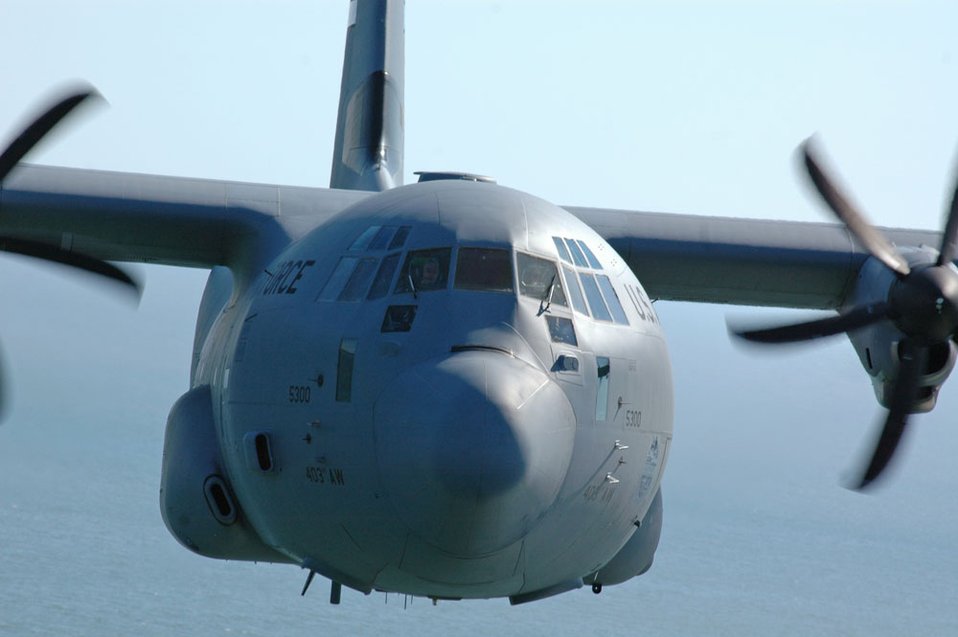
Hurricane Hunters tracking Gustav

Hurricane Hunters spent the third anniversary of Hurricane Katrina flying into yet another tempest, Hurricane Gustav, which made landfall just west of Grand Island, La., Sept 1. Officials from the 403rd Wing at Keesler Air Force Base, Miss., deployed the aircraft to forward operating locations ahead of Hurricane Gustav. Hurricane Hunters also are flying missions into Tropical Storm Hannah, just east of the Bahamas.